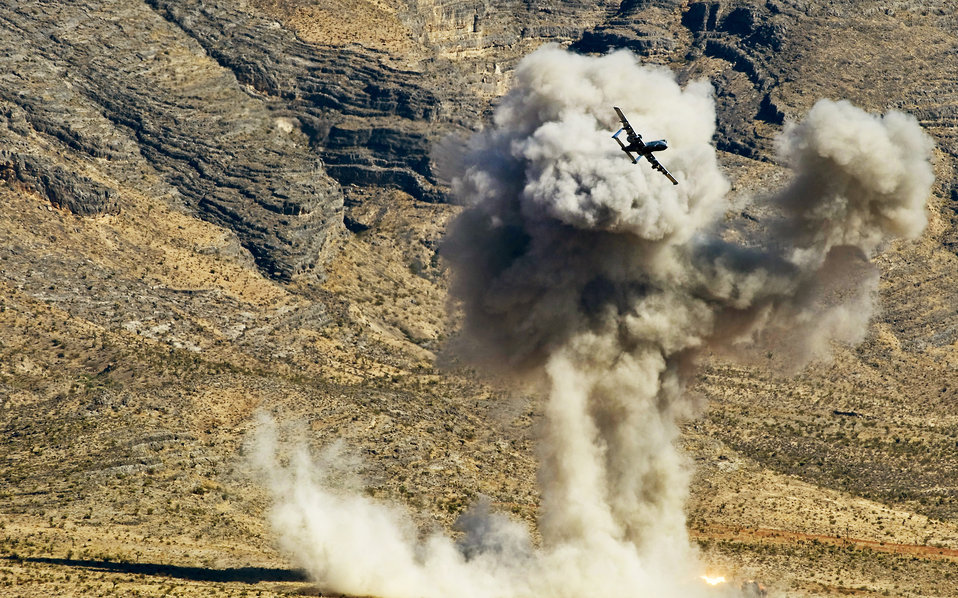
Bombs on target

An A-10 Thunderbolt II from the U.S. Air Force Weapons School at Nellis Air Force Base, Nev., drops a AGM-65 Maverick during a close-air support training mission Sept. 23, 2011, over the Nevada Test and Training Range. U.S. Air Force Weapons School students participate in many combat training missions over the NTTR during the six-month, graduate-level instructor course.